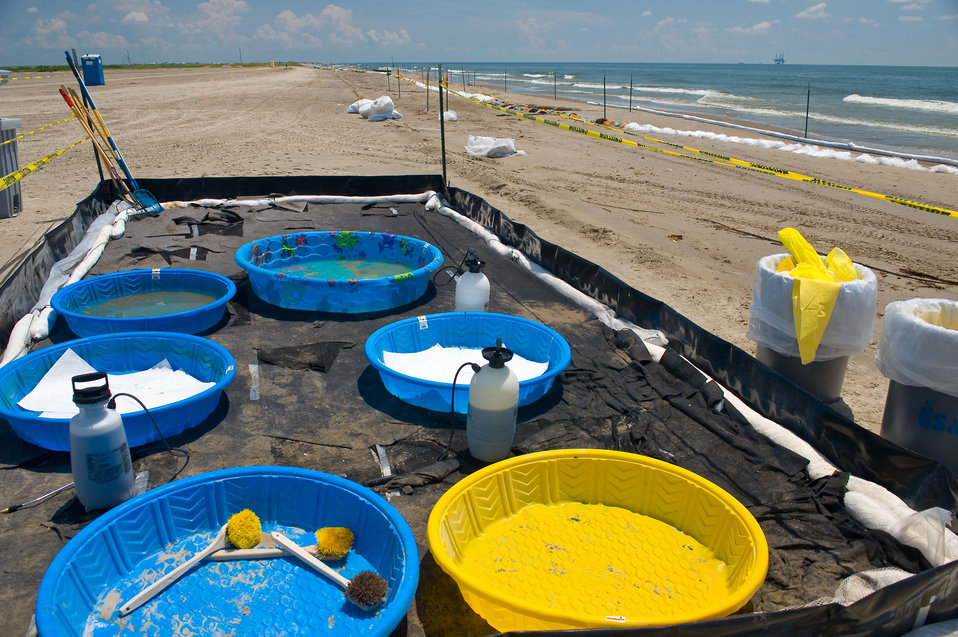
June 1, Tubs are used for decontamination of worker boots and equipment

Decontamination tubs at a cleanup site on Lafourche Beach, La.